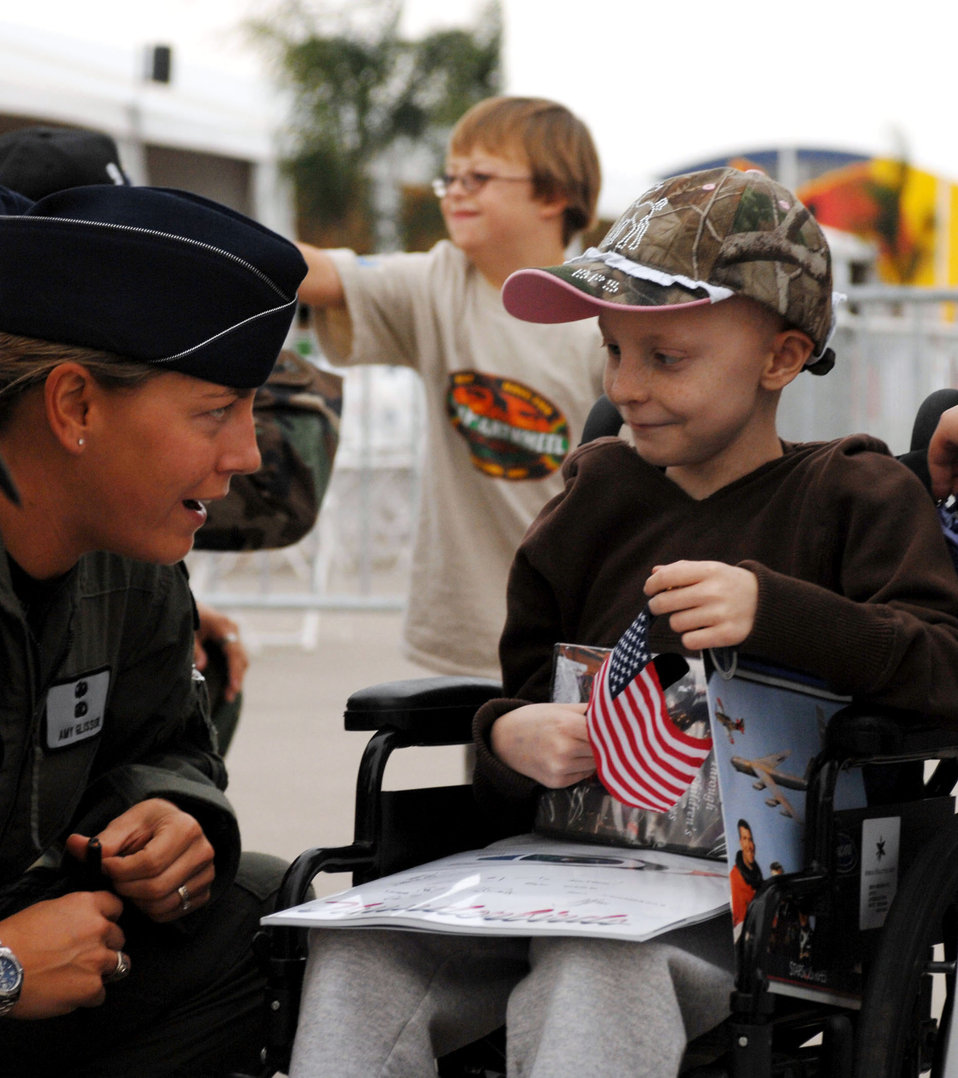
It's an aviation nation

Capt. Amy Glisson speaks with Allyson Cummings from the Make-A-Wish Foundation, at the Aviation Nation Air Show Nov. 9 at Nellis Air Force Base, Nev. Captain Glisson is the Air Force Demonstration Team executive officer. The Make-A-Wish Foundation is geared to enrich the lives of children with life-threatening medical conditions through its wish-granting work. Aviation Nation is one of the largest air shows in North America. This year's show commemorated 60 years of airpower and was the capstone event of the Air Force's yearlong 60th anniversary celebration.